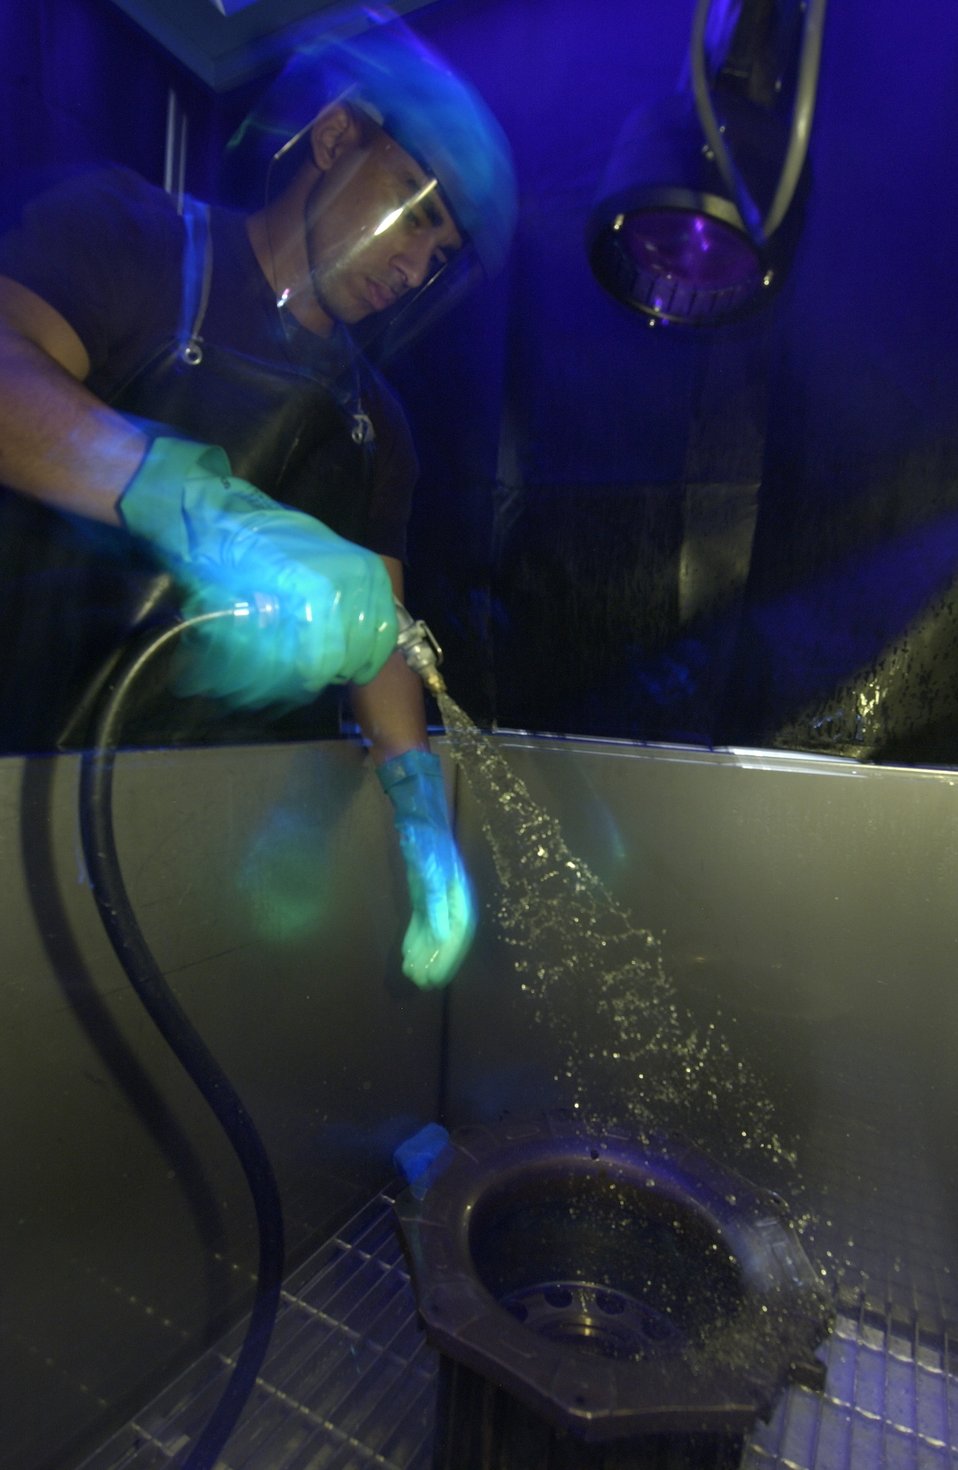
NDI inspections

CHARLESTON AIR FORCE BASE, S.C. -- Senior Airman Jorge Vargus rinses fluorescent penetrant on a main landing gear assembly from a C-17 Globemaster here. Airman Vargus is a nondestructive inspection testing journeyman assigned to the 437th Maintenance Squadron.